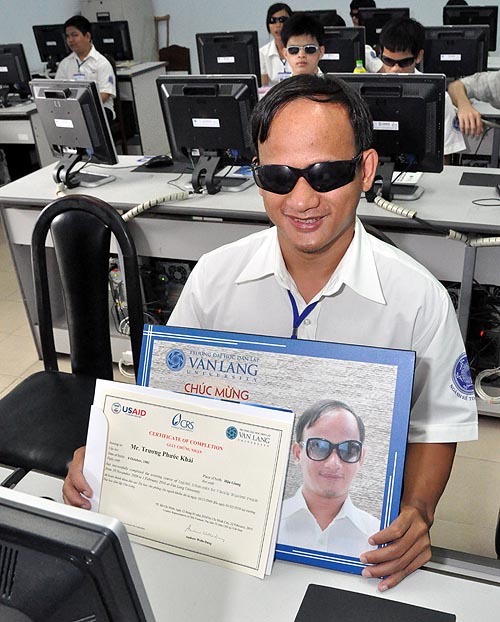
USAID assists persons with disabilities in Vietnam

Truong Phuoc Khai proudly displays his USAID-sponsored IT training certificate in Ho Chi Minh City.